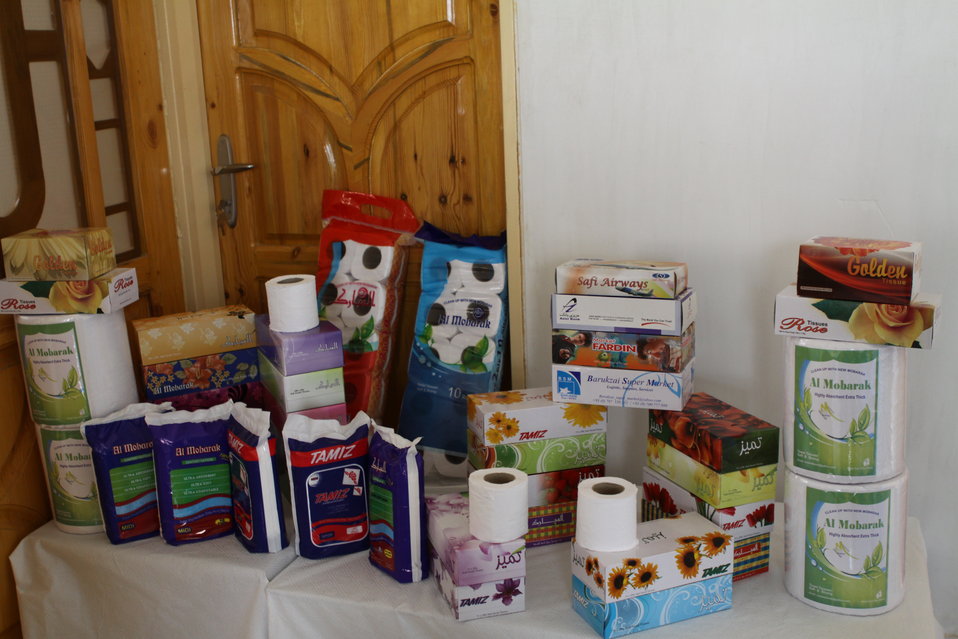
100525 Hirat Marble Conference 839